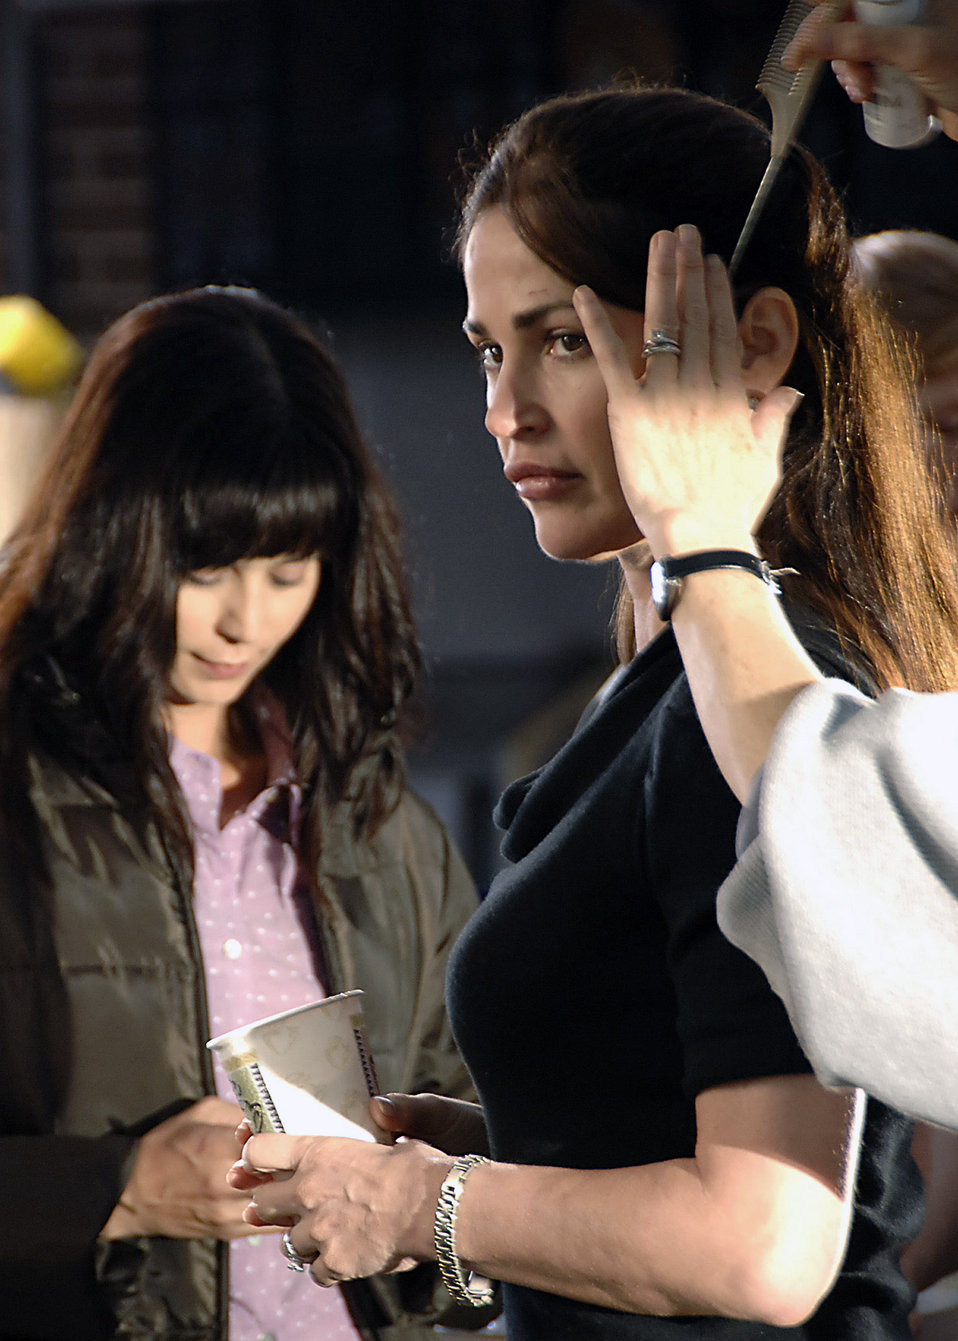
'Army Wives' films on Charleston

Actress Kim Delaney gets her hair done while filming a scene for an upcoming Lifetime television episode of